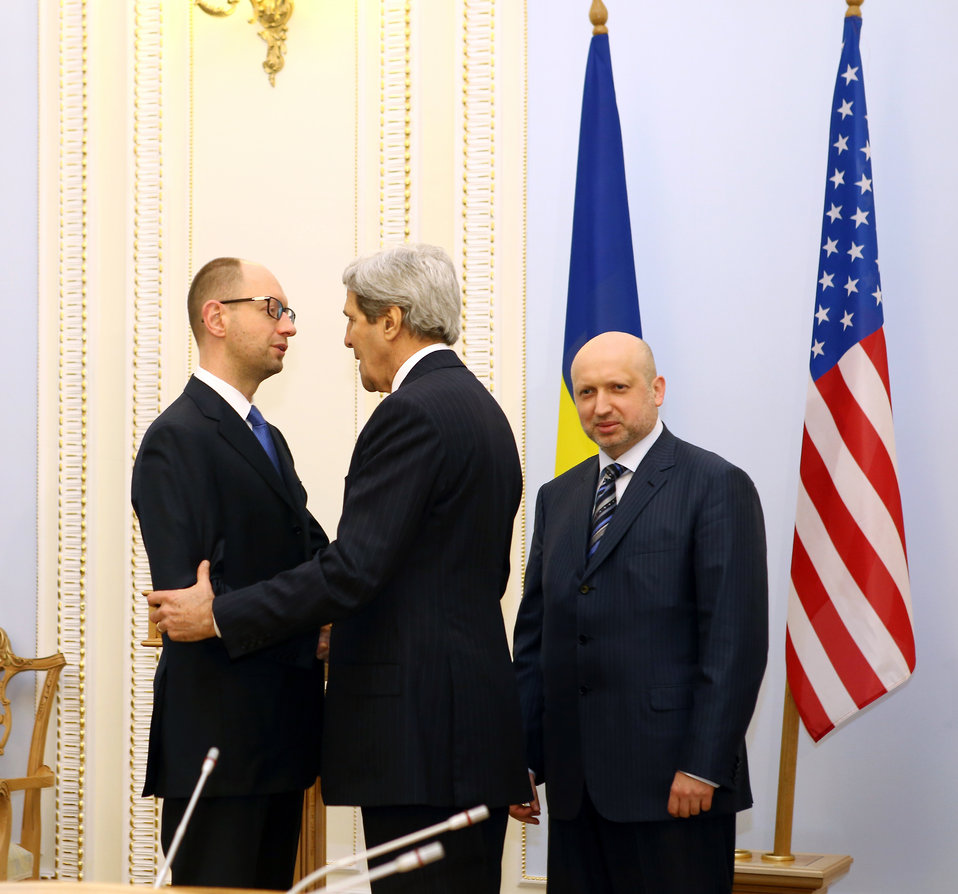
Secretary Kerry Meets With Ukraine's Interim President Turchynov and Prime Minister Yatsenyuk

U.S. Secretary of State John Kerry meets with Ukraine's interim Prime Minister Arseniy Yatsenyuk and President Oleksandr Turchynov at the Verkhovna Rada in Kyiv, Ukraine, on March 4, 2014.